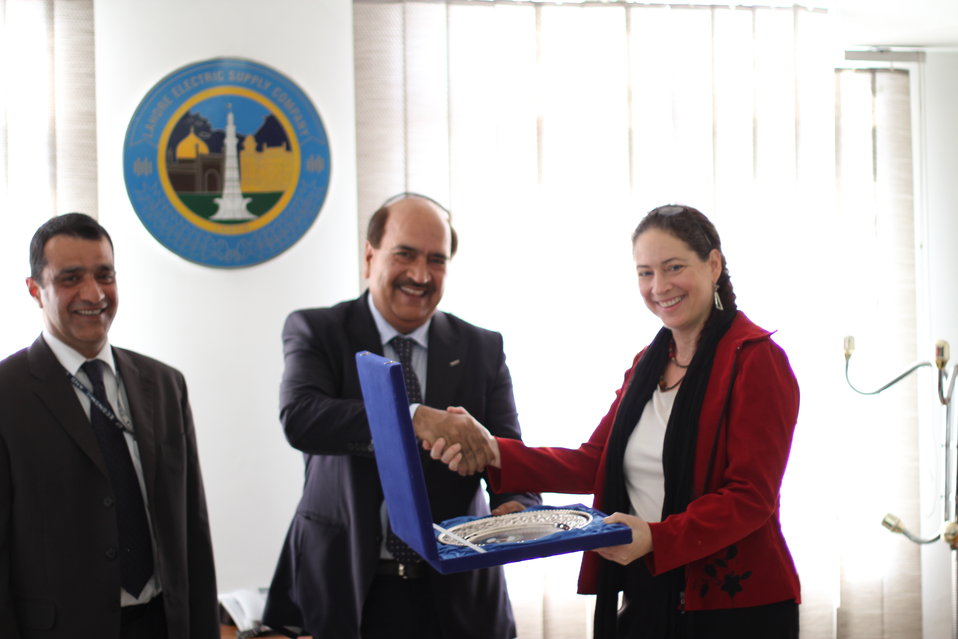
CEO LESCO Mr. Sharafat Ali Sial presenting insignia to Ms. Melissa Knight, the director of USAID energy office at the LESCO headquarter Lahore.

Lahore, February 29, 2012 - A team of USAID officials led by Ms. Melissa Knight, USAID Energy Office Director, visited Lahore Electric Supply Company (LESCO) to discuss the ongoing projects of USAID for LESCO and received briefing from the CEO LESCO, Sherafat Ali Sial about the performance of LESCO. The projects undertaken by USAID Power Distribution Program for LESCO were also discussed and results achieved so far were presented by LESCO. The USAID team along with LESCO officials then visited the Nargis feeder of Allama Iqbal Town where meter checking, fixing and replacement project has been carried out under USAID Power Distribution Program in collaboration with LESCO.